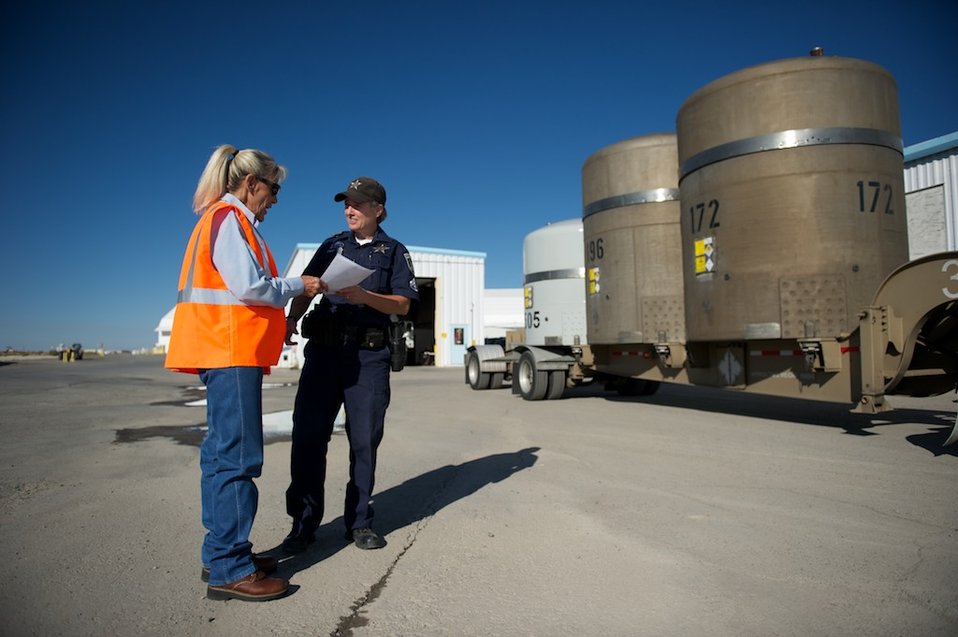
10,000th Shipment

The 10,000th shipment of TRU waste bound for WIPP. The waste was shipped from the Advanced Mixed Waste Treatment Project.